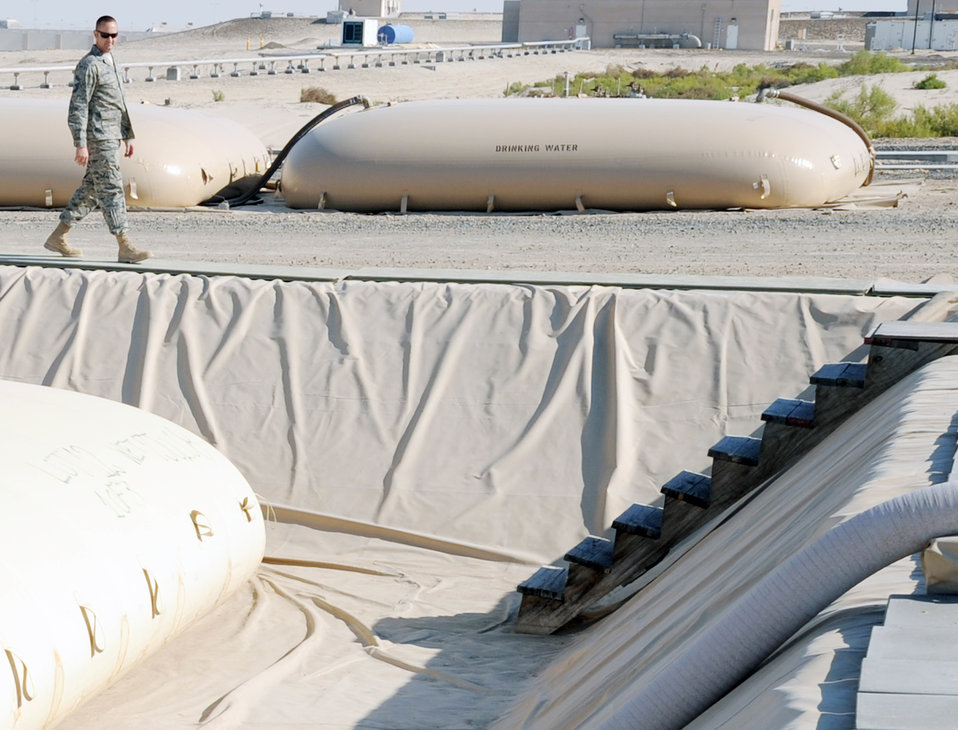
Keeping a fuel bladder full

Senior Master Sgt. James Calhoun checks a 200,000-gallon fuel bladder at an air base in Southwest Asia Jan. 6, 2010. Sergeant Calhoun is the superintendent of the 380th Expeditionary Logistics Readiness Squadron fuels management flight. He and other fuels Airmen can off-load up to 600,000 gallons of fuel from supplier fuel trucks which is then stored to one of 16 fuel bladders.